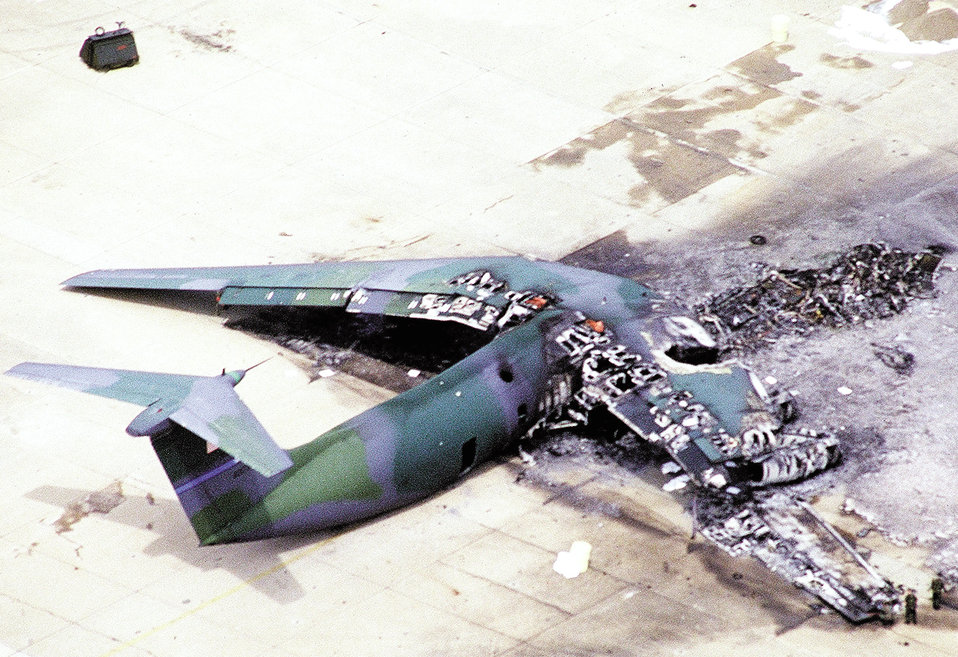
Base recalls teamwork following ramp horror

1990's -- POPE AIR FORCE BASE, N.C. -- An F-16 Fighting Falcon hit the tarmac in front of this C-141 Starlifter setting it on fire March 23, 1994. The crash spread wreckage and burning fuel into an area where paratroopers waited to board the aircraft. The accident killed 24 Soldiers and injured more than 100 others.